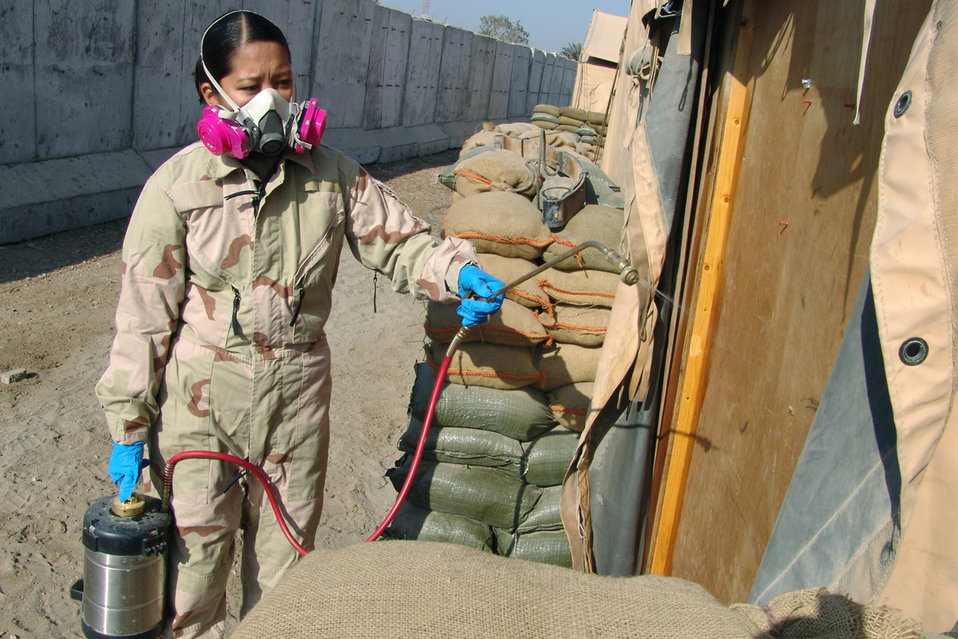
Pests no match for 'Bug Girl'

BAGHDAD, Iraq -- Senior Airman Amy Arriola sprays a tent to control pests. She is the pest controller for the 447th Expeditionary Civil Engineer Squadron at Camp Sather here, and is deployed from Guam Air National Guard's 254th CES.